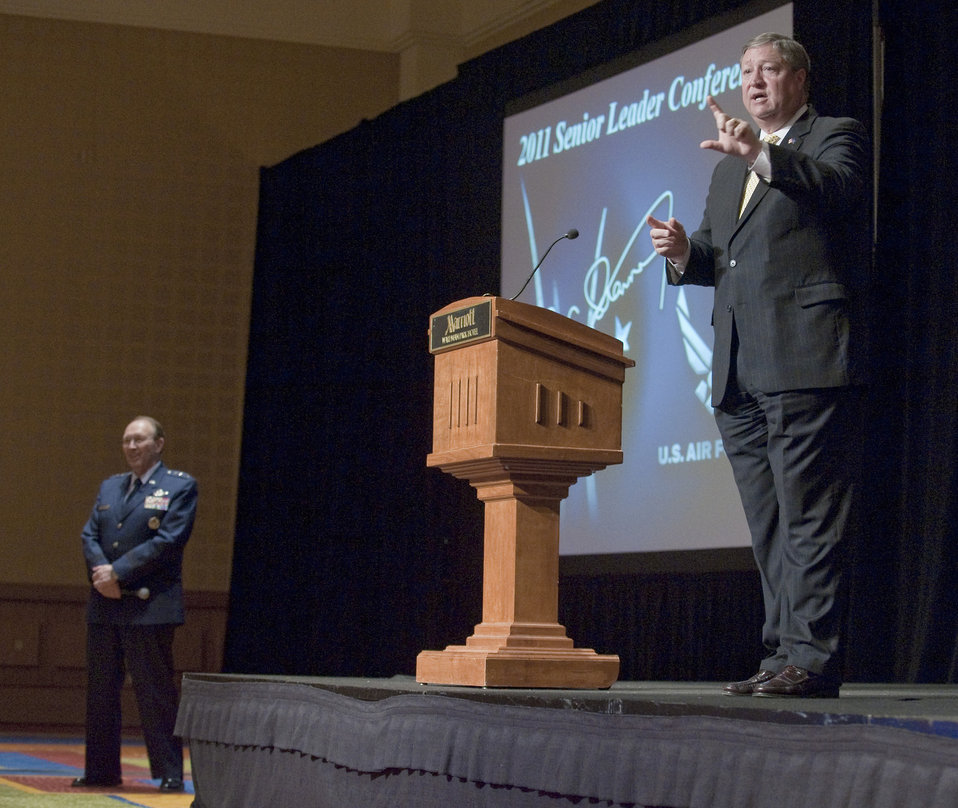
Air Force Reserve Command Senior Leader Conference

Chief of the Air Force Reserve and Air Force Reserve Command Commander Lt. Gen. Charles Stenner (left) looks on as Secretary of the Air Force Michael Donley answers questions from the audience during the 2011 Air Force Reserve Command Senior Leaders Conference May 16, 2011, in Washington, D.C.